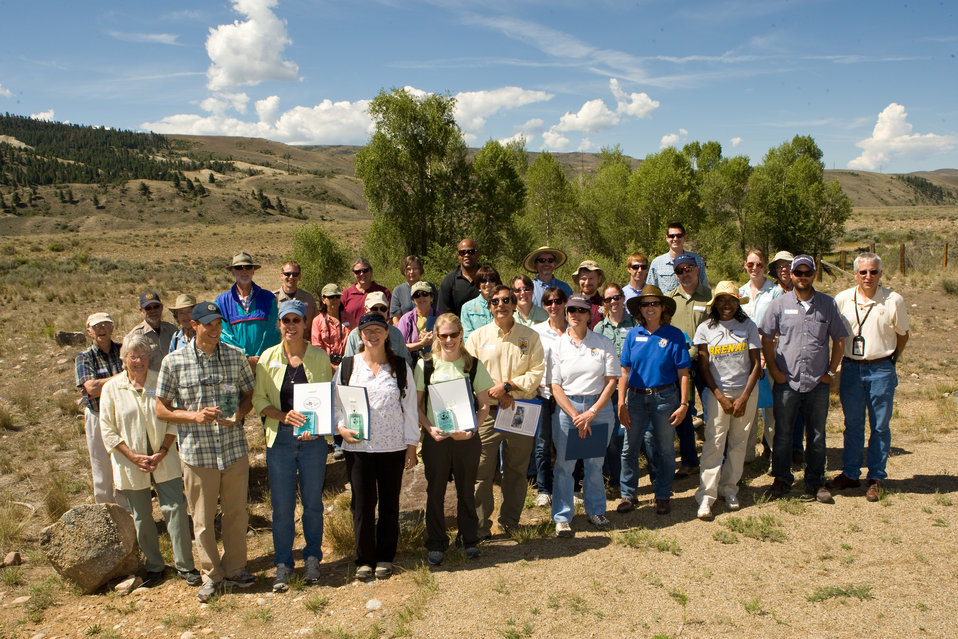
Group Photo 2

The Colorado Rare Plant Conservation Initiative (RPCI) is a partnership of 23 statewide and regional agencies, private organizations, and academic institutions working to conserve 121 rare plants in Colorado. As part of these efforts the group developed the Colorado Rare Plant Conservation Strategy, developed Best Management Practices to reduce energy development impacts, addressed climate change, and developed focused strategies for the conservation of individual species at eight priority landscapes. The group has also worked to coordinate volunteer efforts for plant conservation across the state.